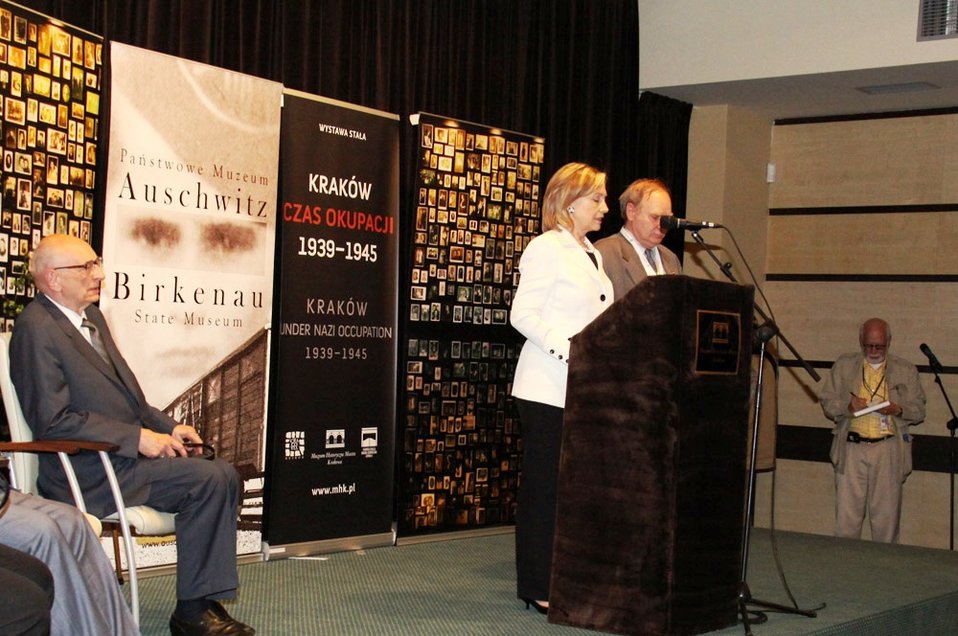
Secretary Clinton Delivers Remarks

U.S. Secretary of State Hillary Rodham Clinton delivers remarks at the Schindler Factory Museum in Krakow, Poland, on July 3, 2010.